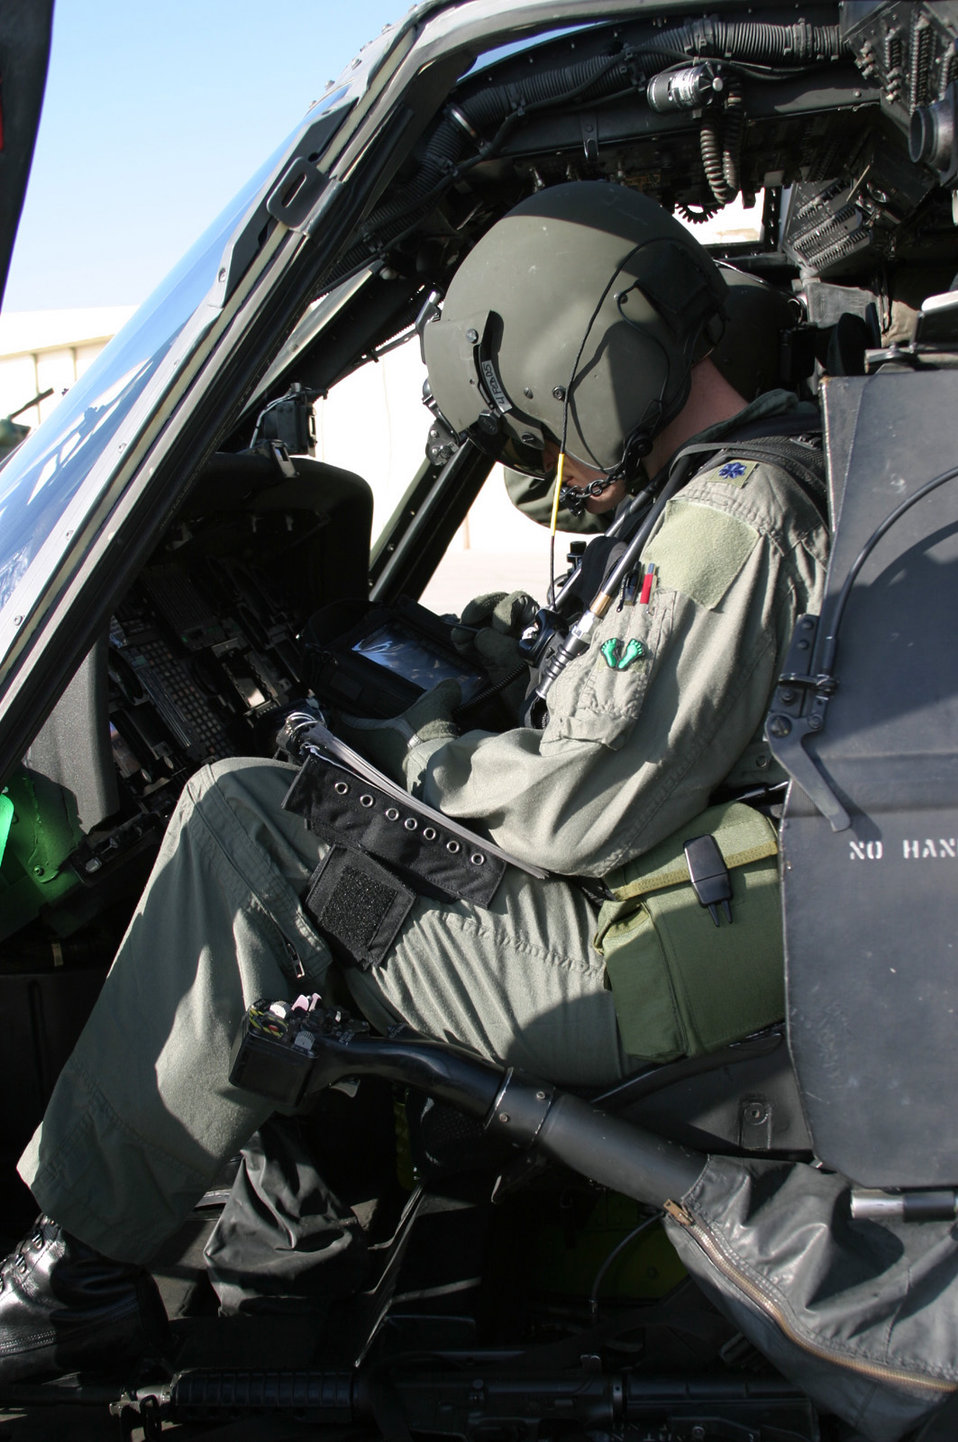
Kadena Airmen deploy to Philippines

KADENA AIR BASE, Japan -- Lt. Col. Billy Thompson, a 33rd Rescue Squadron pilot, prepares the navigation system of a HH-60 Pave Hawk helicopter before takeoff Dec. 9 for a mission to the storm-devastated Philippines. Three HH-60s from the 33rd RQS, two MC-130 Combat Shadows from the 353rd Special Operations Group and a 909th Air Refueling Squadron KC-135 Stratotanker launched from here to provide humanitarian assistance to nearly 170,000 people displaced by Typhoon Nanmadol.